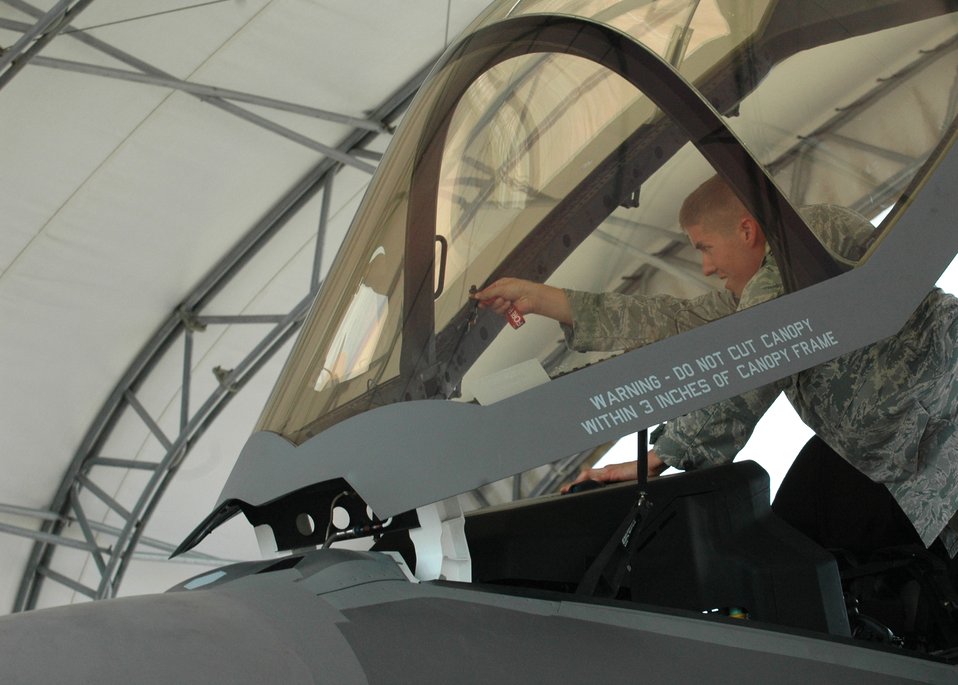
Eglin F-35 number increases to four

Senior Airman Arthur Verchot prepares an F-35A Lightning II cockpit for tow operations, part of his duties as one of the few Airmen trained in recovering the Air Force's newest aircraft at Eglin Air Force Base, Fla., Aug. 31, 2011. Verchot’s team, part of the 33rd Aircraft Maintenance Squadron, recovered the aircraft as part of the delivery of the joint strike fighter to the 33rd Fighter Wing. With the assistance of Lockheed Martin logistics support, two Air Force three-man recovery teams are currently trained to support aircraft arrival, with an additional fourteen Airmen trained in towing the jet.